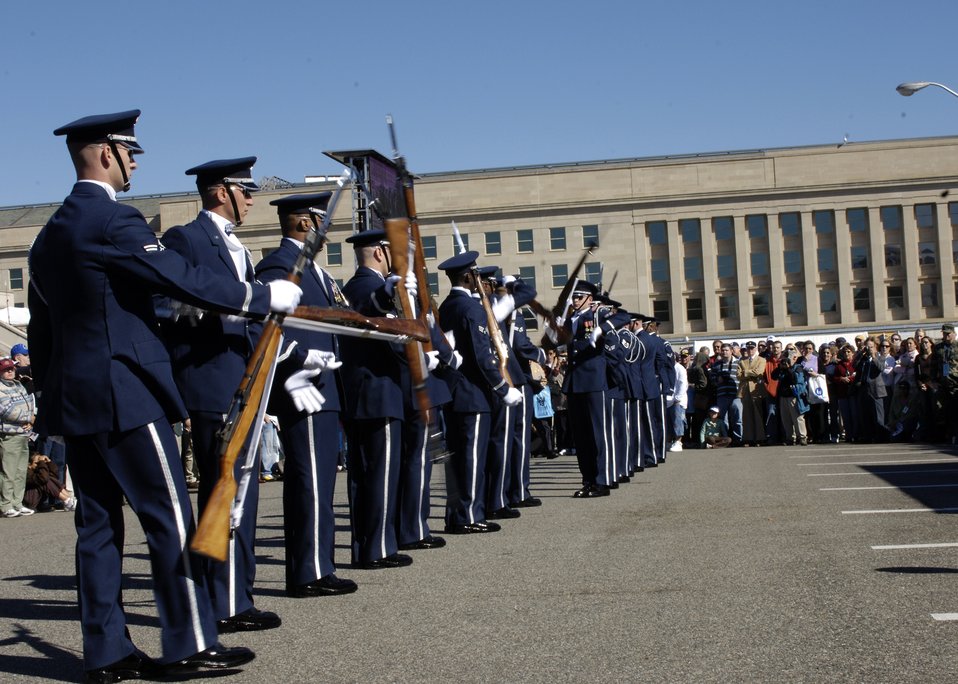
Weapon Exchange

Members of the United States Air Force Drill Team perform during the Air Force open house at the Pentagon on Saturday, Oct. 14, 2006. The open house is running in conjunction with the official ceremony to dedicate the Air Force Memorial. President George W. Bush will join Senior Defense Dept. and Air Force officials in a ceremony to present the memorial to the Nation. Desiged by the late James Ingo Freed the memorial with its three soaring spires inspired by the U.S. Air Force Thunderbirds bomb burst manuever, pays tribute to and honors the patriotic men and women of the U.S. Air Force and its predeccessor organizations. An open house will run near the Pentagon in conjunction with the dedication ceremony which will feature performances by the U.S. Air Force Band, the U.S. Air Force Honor Guard drill team, and will culminate with a concert featuring country music performer LeeAnn Womack.